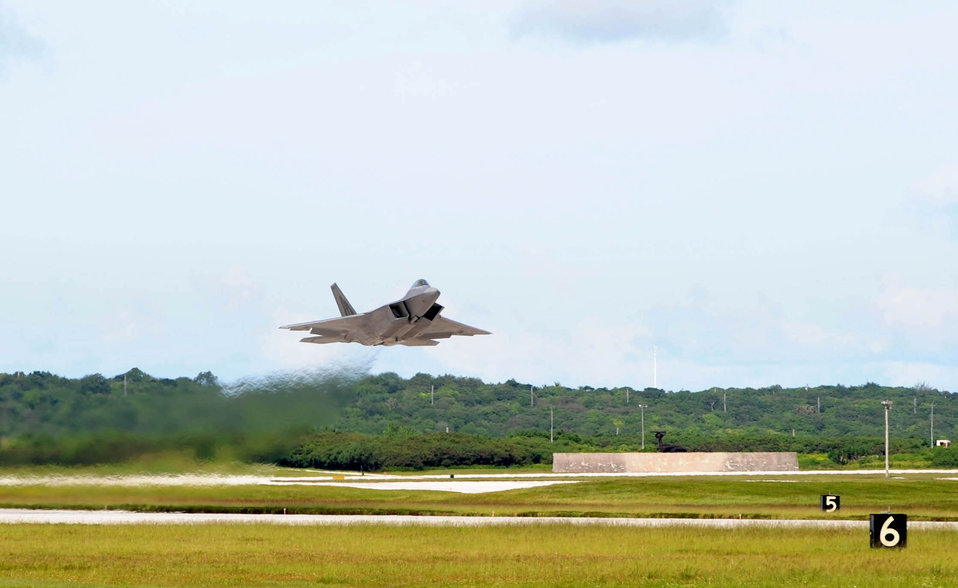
F-22 Raptor takes off from Andersen AFB, Guam

An F-22 Raptor from the 525th Expeditionary Fighter Squadron takes off Aug. 25, 2009, from Andersen Air Force Base, Guam. The F-22 is deployed from Elmendorf AFB, Alaska, to support U.S. Pacific Command's theater security package in the Asia-Pacific region.